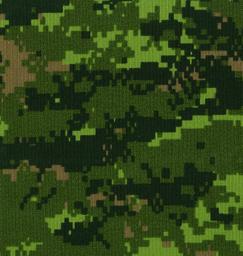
CADPAT digital camouflage pattern of the Canadian Forces.